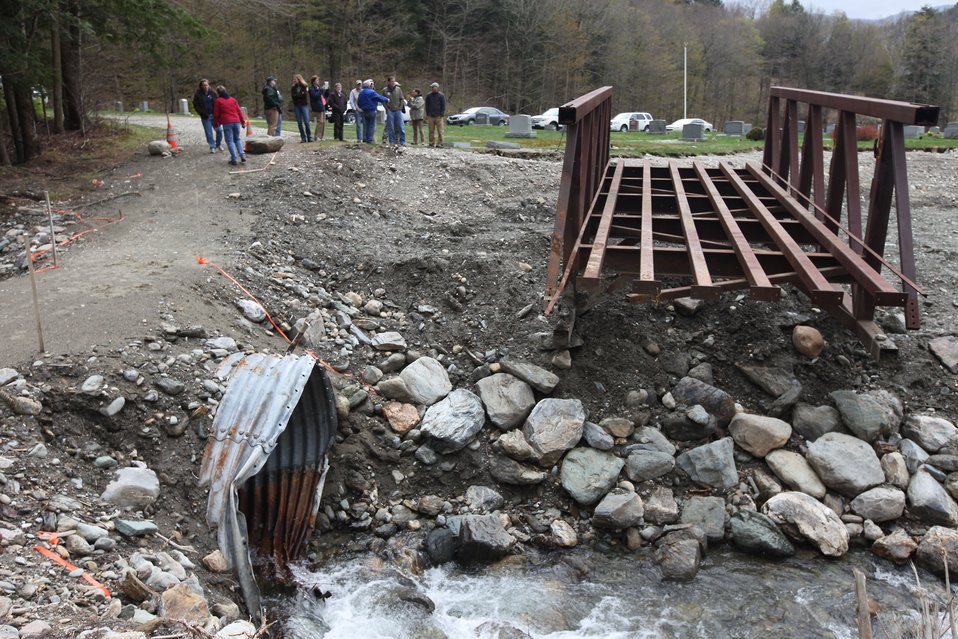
Dan Ashe and group near culvert replacement project

U.S. Fish & Wildlife Service Director Dan Ashe visits the Northeast Region
for a tour of the White River National Fish Hatchery in Bethel, Vermont on
April 27, 2012. The hatchery was devastated by Tropical Storm Irene and
Dan Ashe had the chance to meet and thank the staff for their heroic work.
Director Ashe also visited restoration/flood response/fish passage project
sites in Rochester, Vermont and met with local officials and staff from the
White River Partnership.